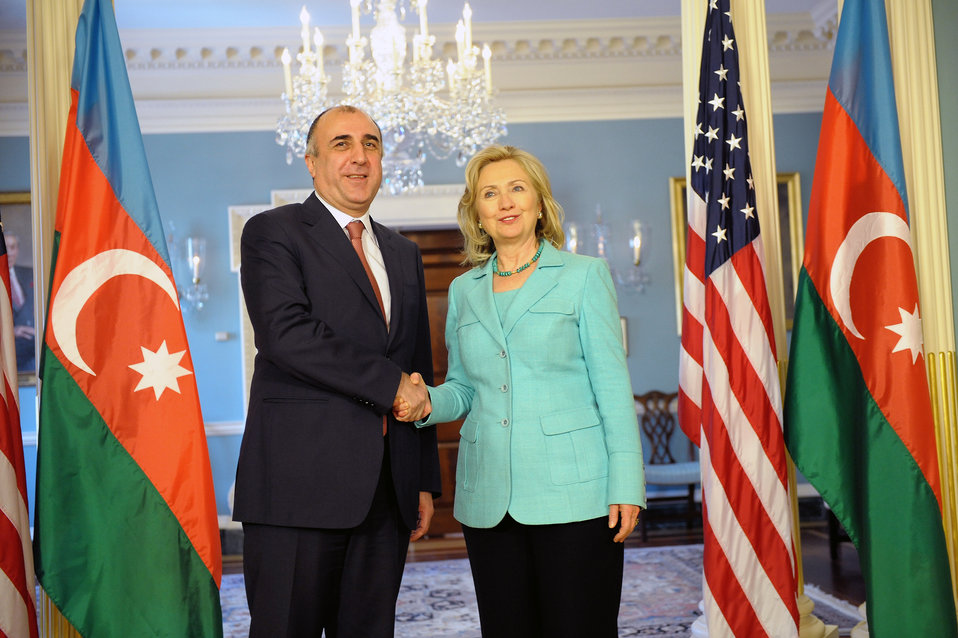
Secretary Clinton Shakes Hands With Azerbaijani Foreign Minister Mammadyarov

U.S. Secretary of State Hillary Rodham Clinton shakes hands with Azerbaijani Foreign Minister Elmar Mammadyarov, at the U.S. Department of State in Washington, D.C., on June 3, 2011.